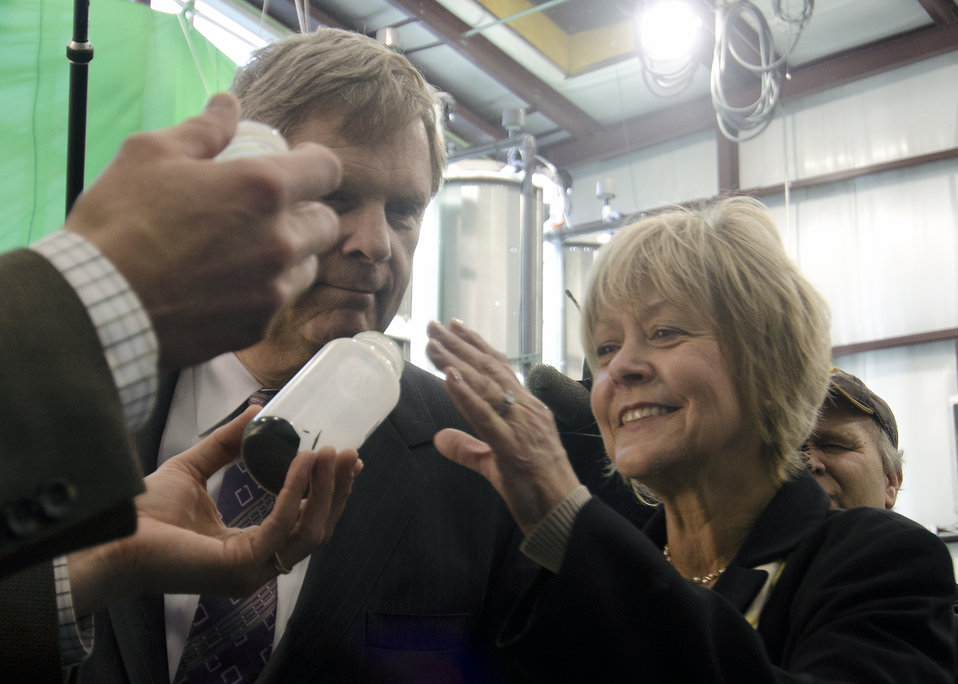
U.S. Department of Agriculture (USDA) Secretary Tom Vilsack toured BioProcess Algae facility at Green Plains Renewable Energy (GPRE), Inc. and unveiled the Phase II key component - commercial scale photo bioreactors/harvesters; after which he talked with company leadership, biologists, and engineers; guests and news media during the grand opening ceremony on April 15, 2011 in Shenandoah, IA. The operation is co-located within an GPRE’s ethanol factory and where BioProcess Algae technology is used to waste products; carbon dioxide, recycled heat and water to mass-produce algae. Algae from this facility are used for animal feeds; pharmaceutical and beauty products.